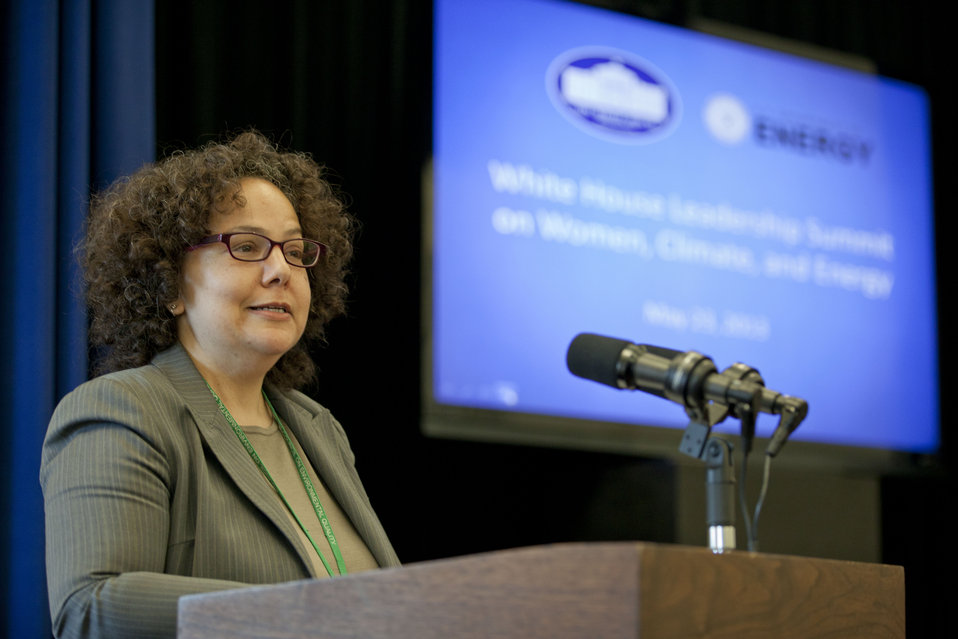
White House Leadership Summit on Women, Climate and Energy

Nancy Sutley, Chair of the Council on Environmental Quality, delivered welcoming remarks.